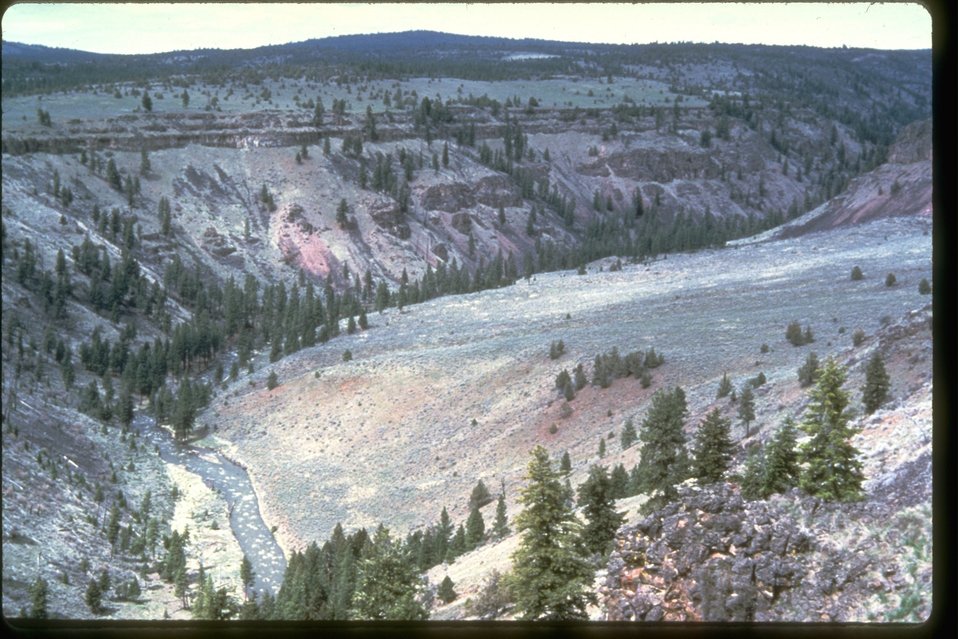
Malheur River-Bluebucket Creek Wilderness Study Area. OR 2-14